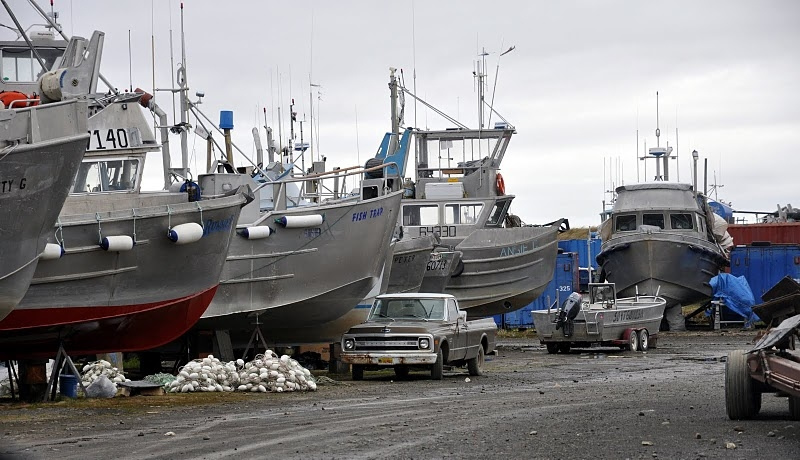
June, 2011 Fishing boats stand ready

The average annual run of 37.5 million sockeye salmon in Bristol Bay supplies half of the world’s wild sockeye and accounts for thousands of jobs.

Visit www.epa.gov/bristolbay for more information about EPA's Bristol Bay Watershed Assessment